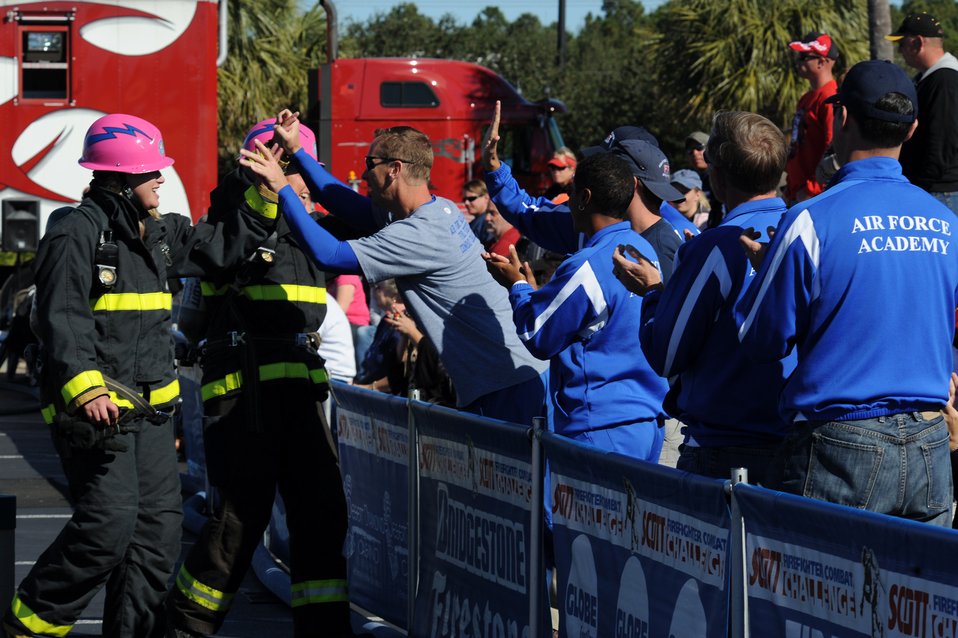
Air Force firefighters showcase skills in world competition

Senior Airman Jessica Morehouse and Stacy Billapando are congratulated by their Air Force Academy teammates after they completed the tandem event at the Scott Firefighter Combat Challenge in Myrtle Beach, S.C., on Nov. 13, 2010. Airman Morehouse is assigned to the Air Force Academy, Colorado Springs, Colo.